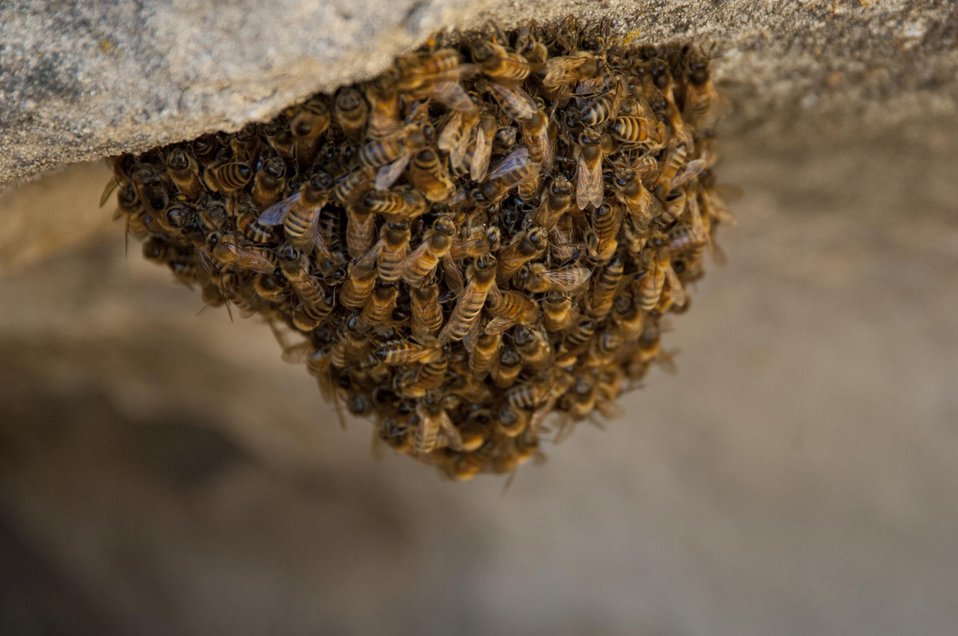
Honey Bees Swarm